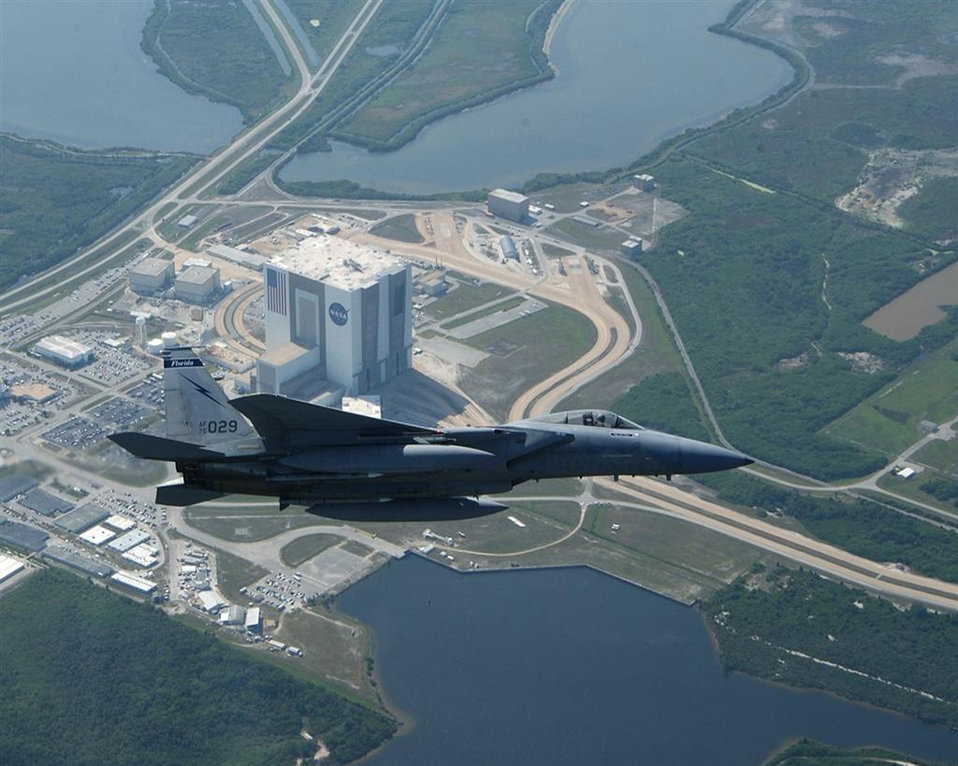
Anticipation is backbone of homeland defense

An F-15 Eagle flies over NASA's Cape Canaveral. NORAD and NORTHCOM routinely provide military support to NASA shuttle launches, ensuring airspace safety and security for the launch and landing by enforcing the FAA's Temporary Flight Restriction zones. NORTHCOM is responsible for an area of operations that includes the United States, Canada and Mexico. The command serves as a